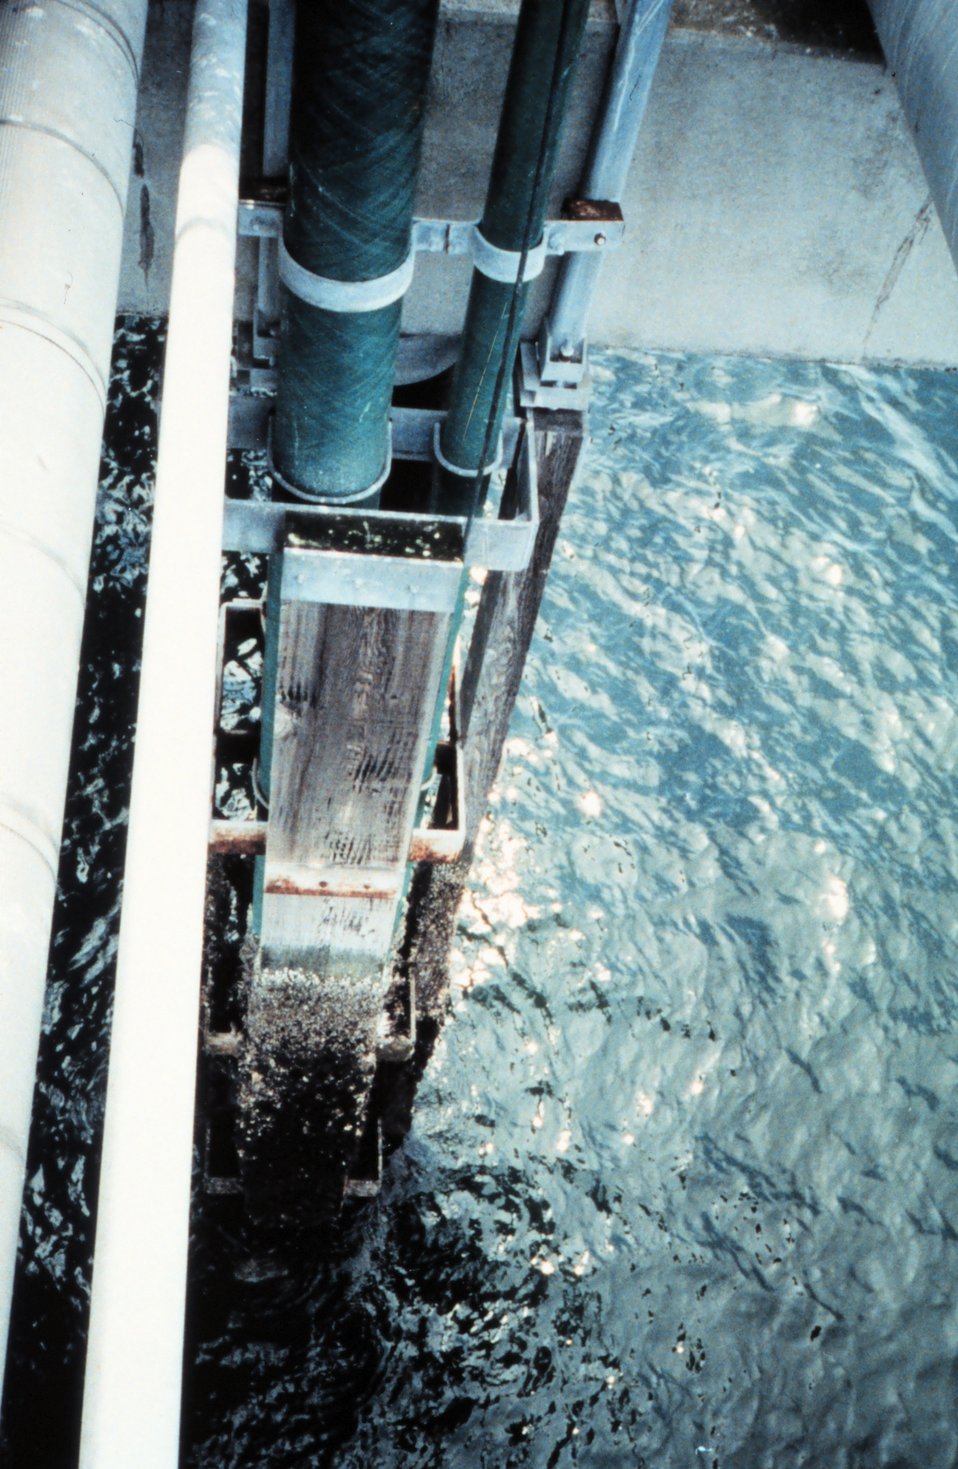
The tide gage installation at Cherry Point